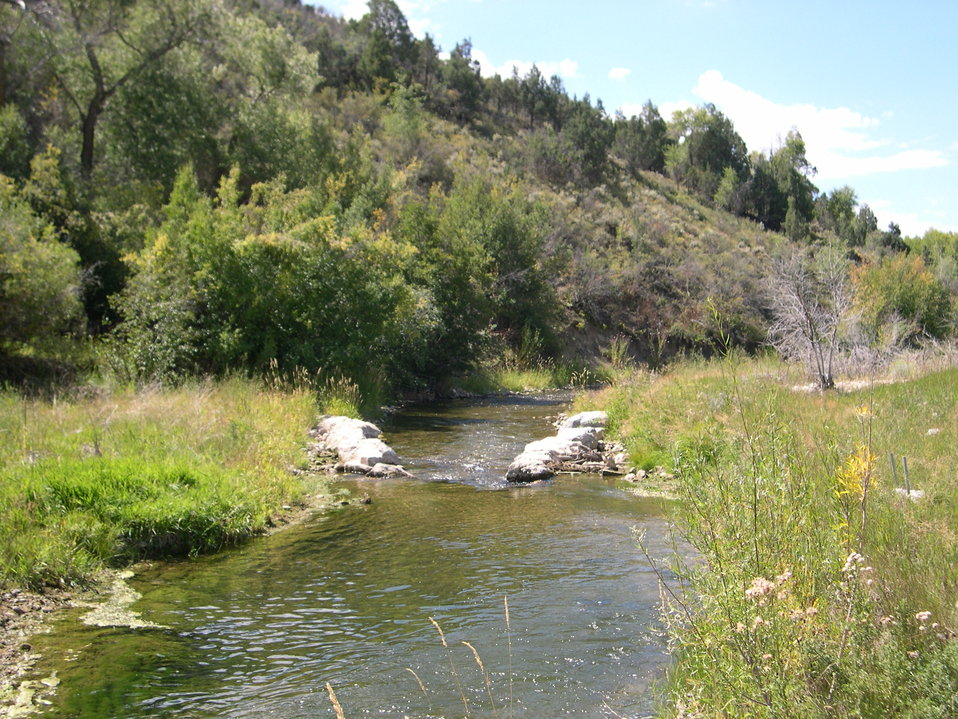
In-Stream Restoration Project in Utah

Utah PFW delivers many in-stream projects that positively impact native fish populations.